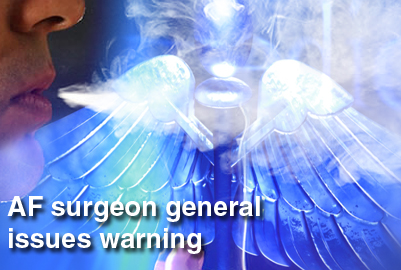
Electronic cigarettes